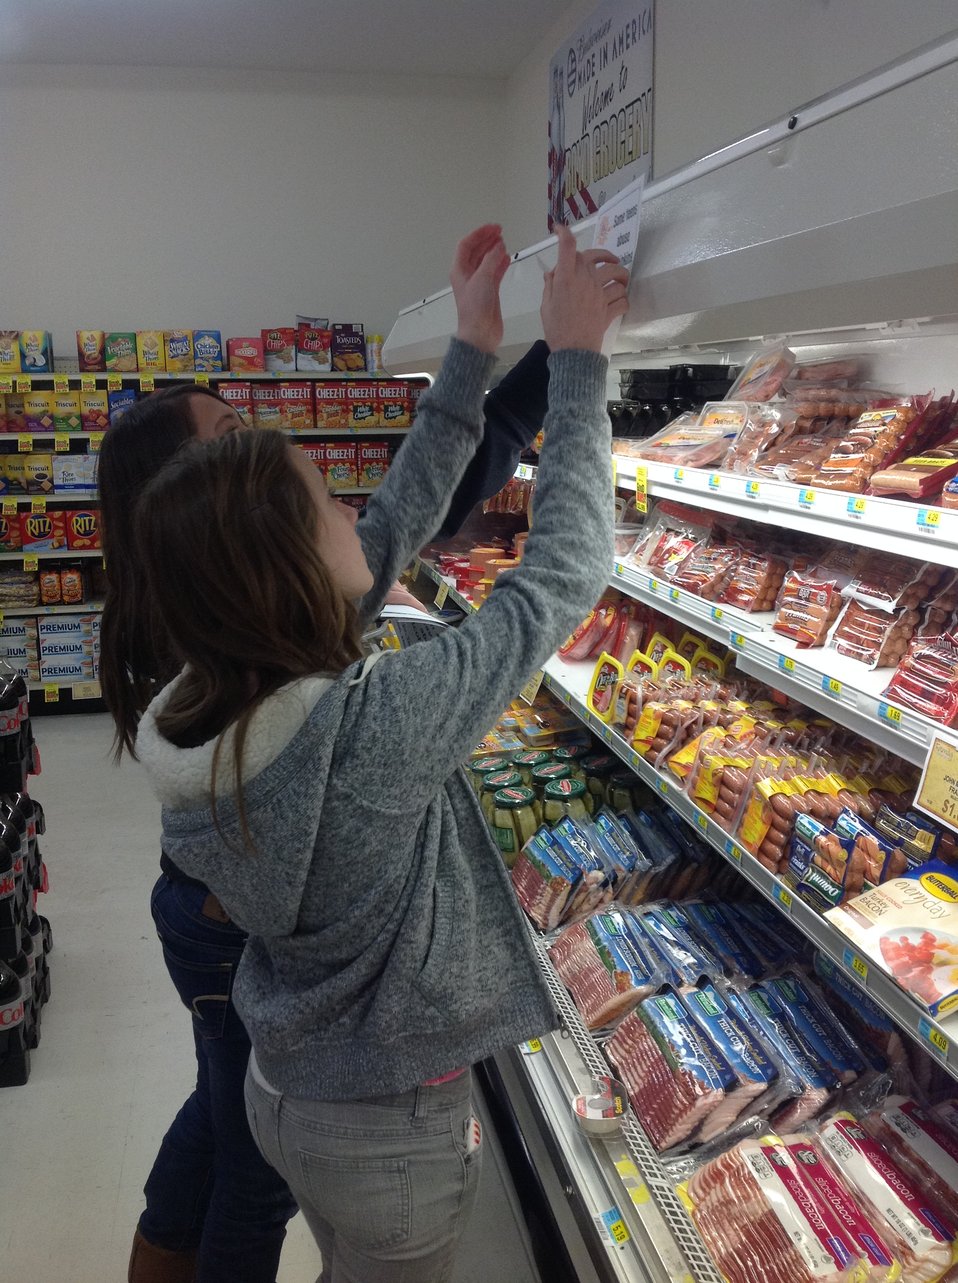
Getting the Word Out

Teenagers from the Van Buren County SAFE Coalition's, Youth Leadership Council (YLC) in Keosauqua, Iowa participate in various events during National Drug Facts Week, 2014.